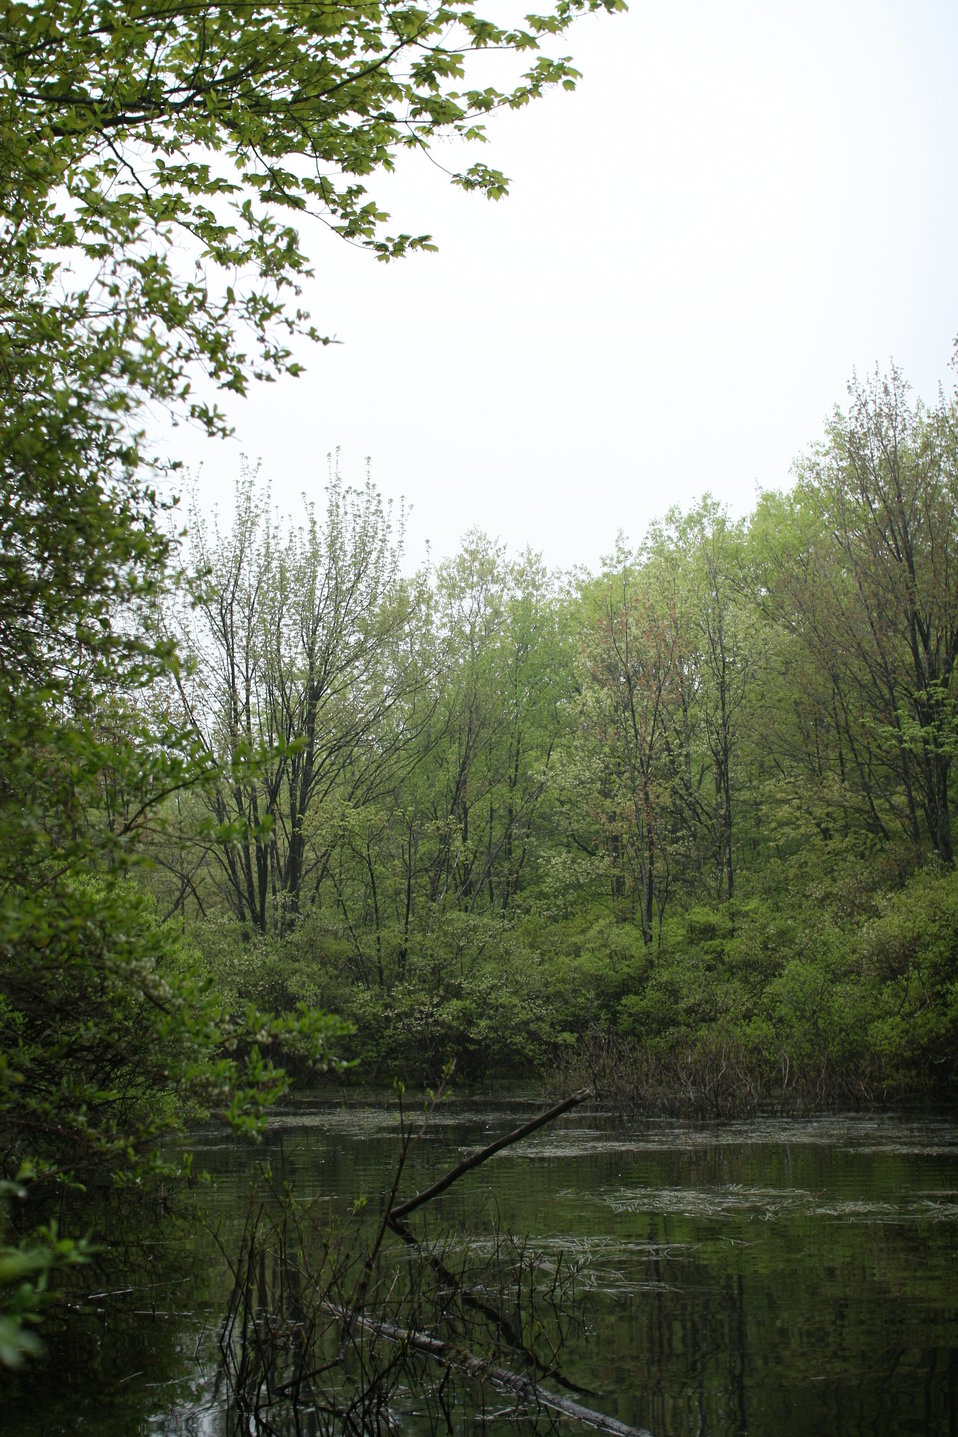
Blanding's turtle habitat at New Boston Air Force Base